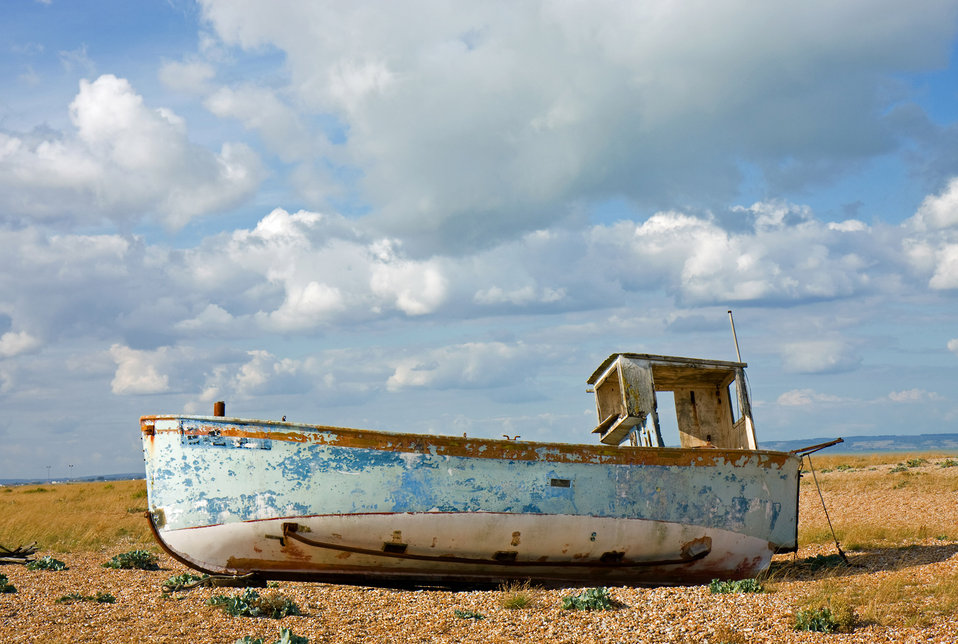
Blue boat

Grungy old blue boat with peeling paint.